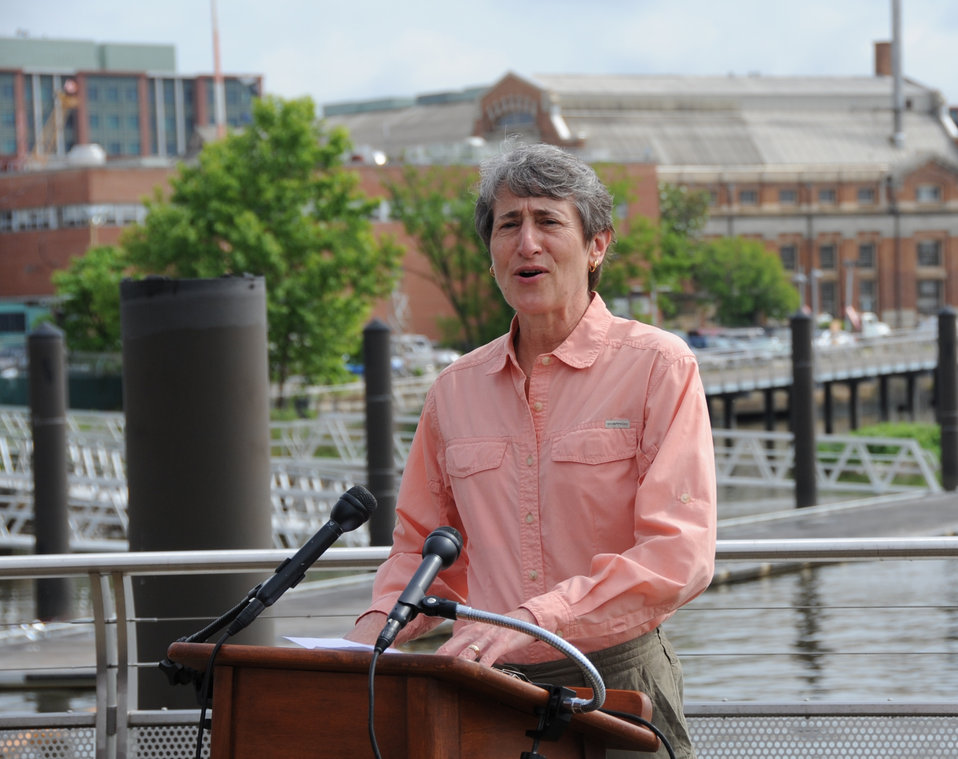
2013 National Fishing and Boating Week

Sally Jewell, Secretary-DOI welcome students at the 2013 National Fish and Boating Week in Washington D.C.